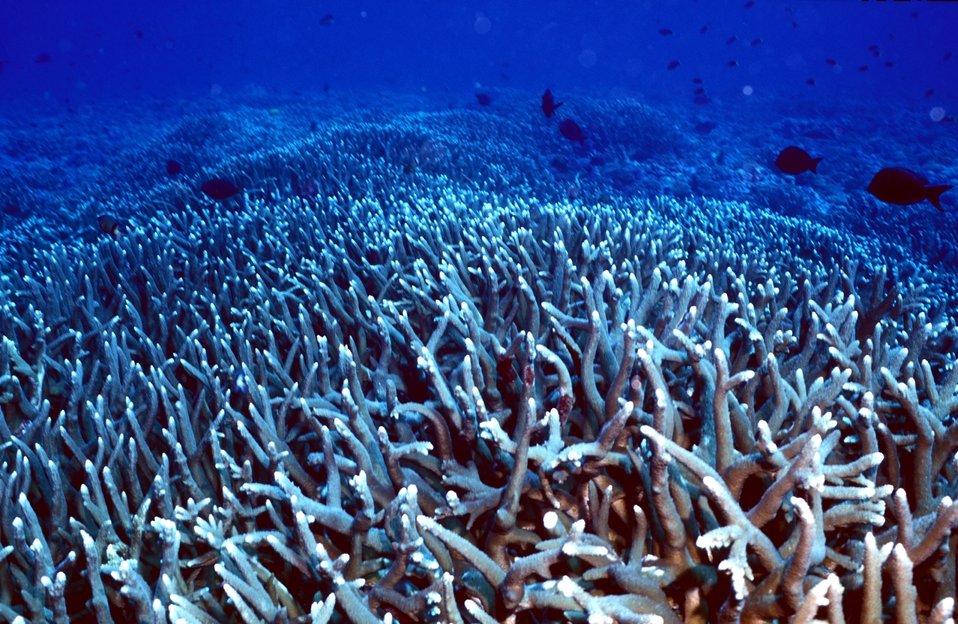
Staghorn coral on Baker Island NWR

Beds of staghorn coral (Acropora Sp) undulate across the sea floor at Baker Island National Wildlife Refuge in the Pacific, some 1,600 miles southwest of Honolulu.